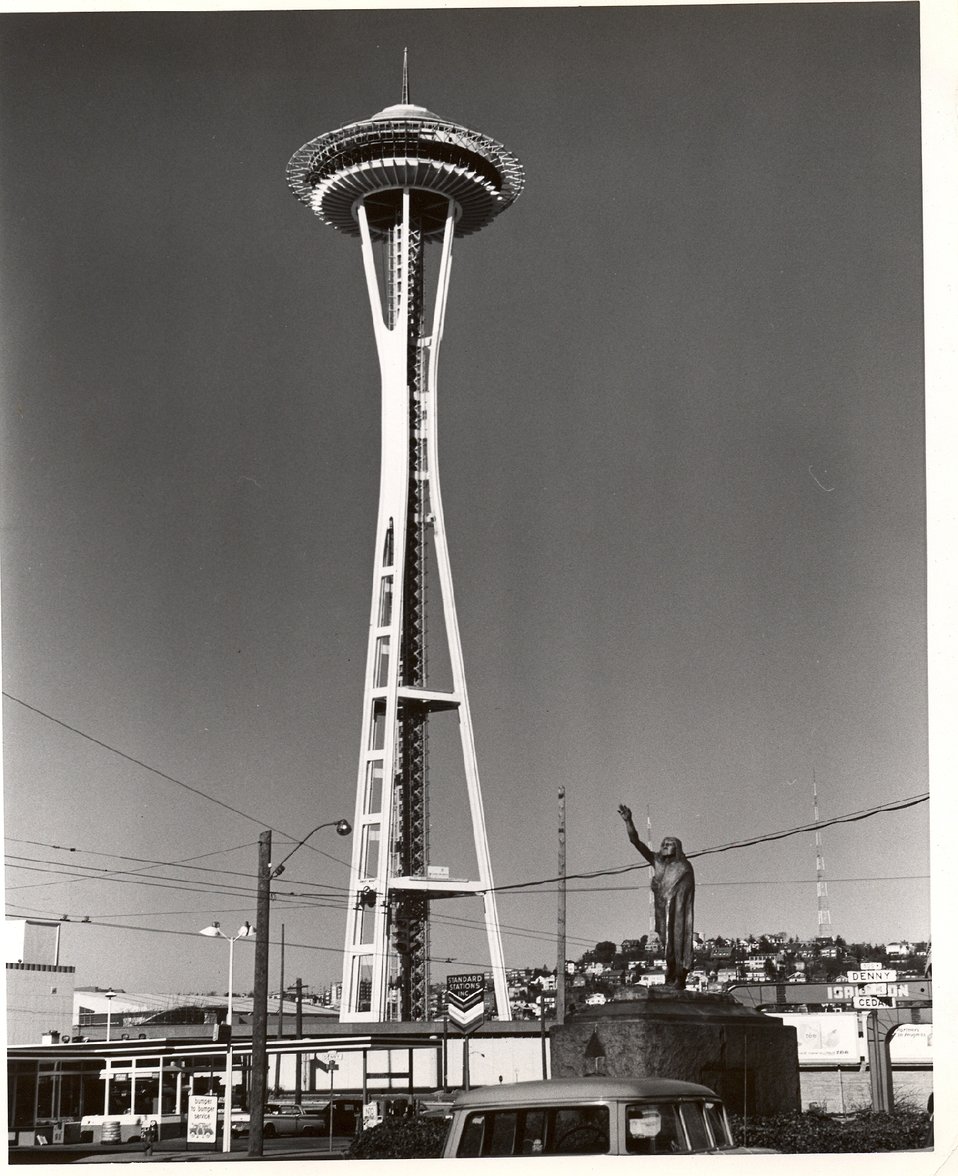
The Space Needle.